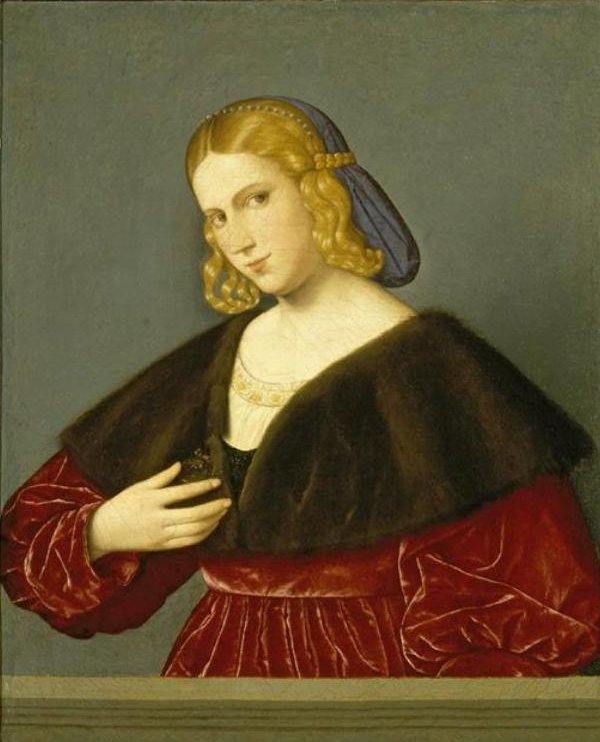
'Portrait of a Woman', painting by Vincenzo Catena, c. 1520, El Paso Museum of Art